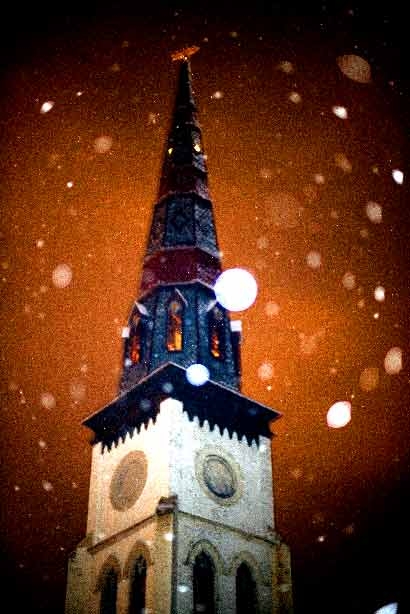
Rebuilt steeple of a church at 23 Wurts Street in the rondout area of Kingston NY. A replica of the Mary Powell steamship can be seen crowning the slate covered tower of some 200 feet. This is the steeple of the Gay Wedding Chapel.